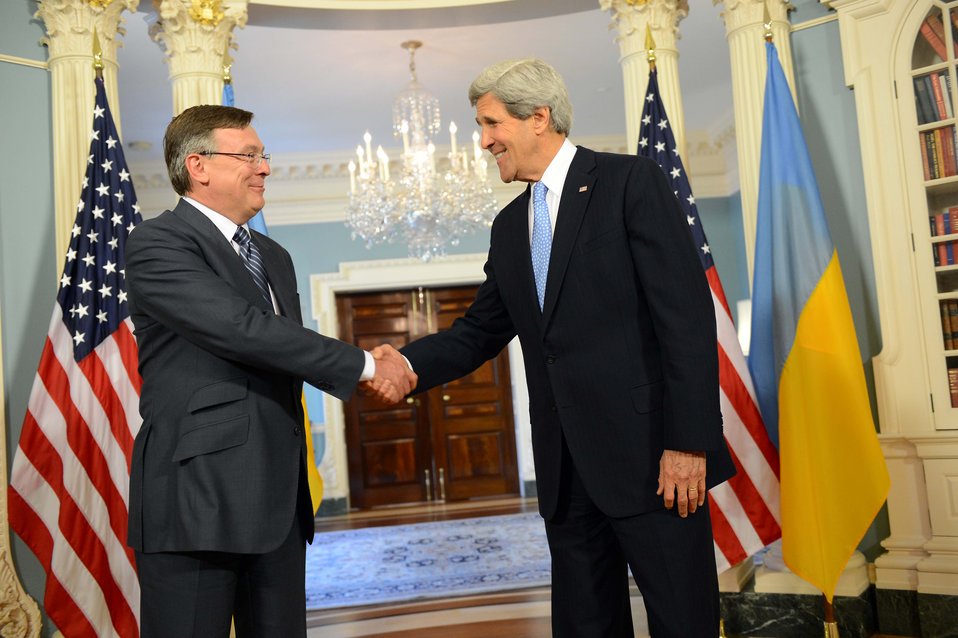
Secretary Kerry Meets With Ukrainian Foreign Minister Kozhara

U.S. Secretary of State John Kerry meets with Ukrainian Foreign Minister Leonid Kozhara at the U.S. Department of State in Washington, D.C., on May 10, 2013.